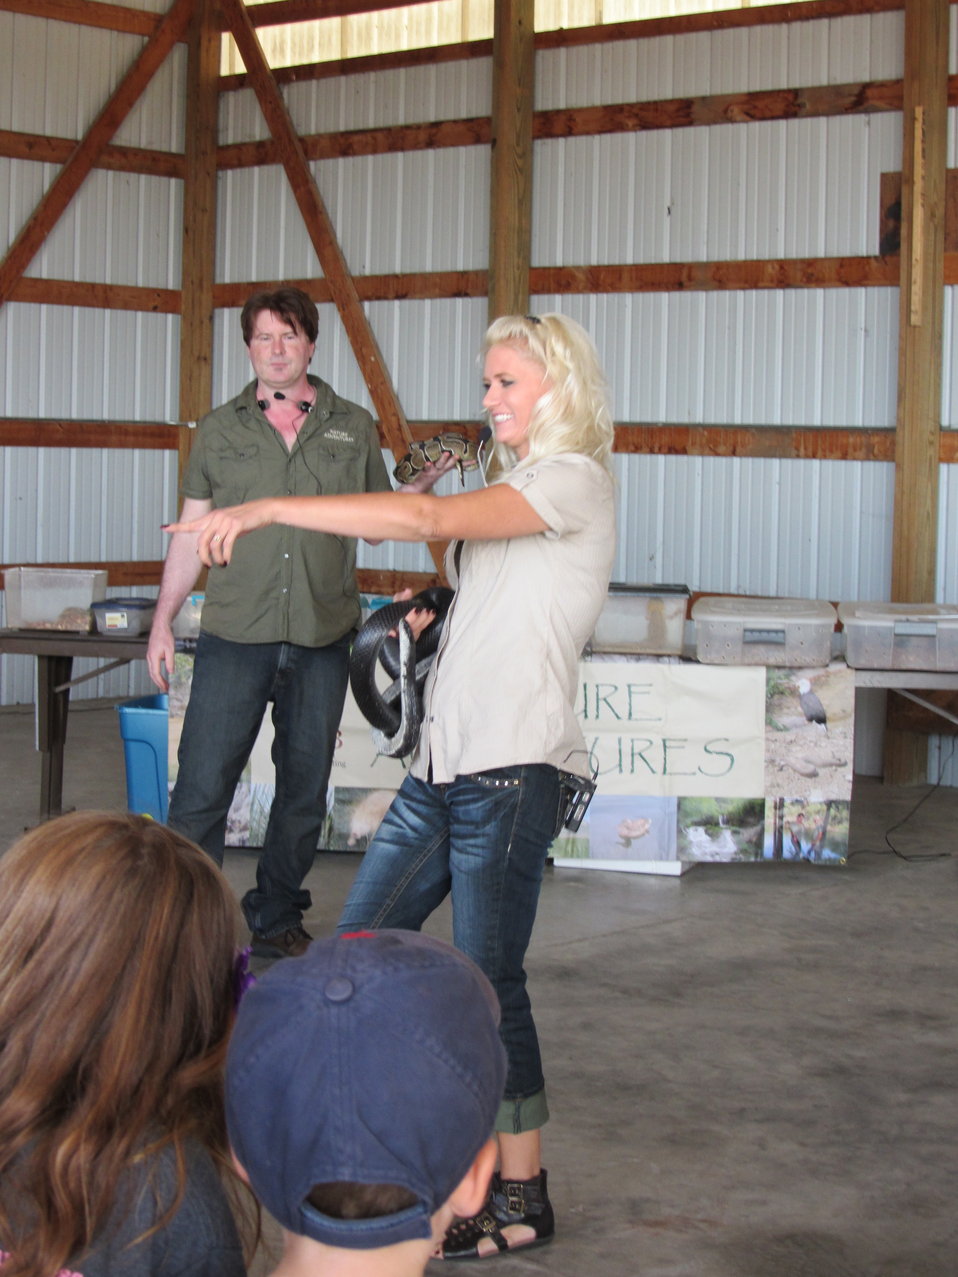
2011 Huron Prairie Fest